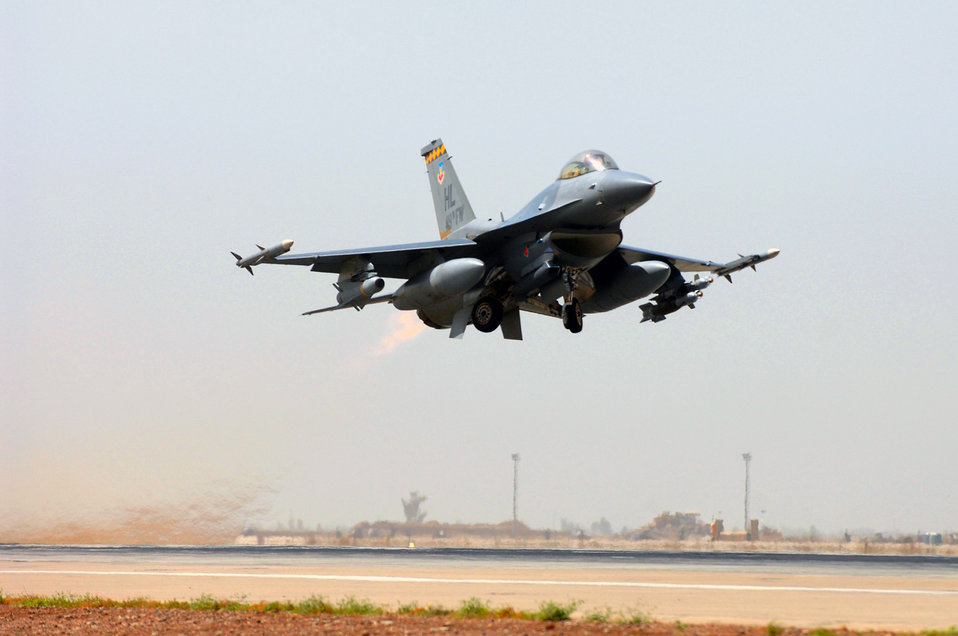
Pilots contribute to 1M GWOT sorties statistic, much more

A 421st Expeditionary Fighter Squadron F-16 Fighting Falcon from Hill Air Force Base, Utah, launches on a sortie at Balad Air Base, Iraq, April 21. On April 20, Air Force pilots had flown more than 1 million sorties in support of the war on terrorism. Many F-16 missions that depart from Balad provide close-air support to Army ground units by identifying improvised explosive devices and emplacers and either recording their actions using intelligence gathering equipment or engaging them with precision weapons.